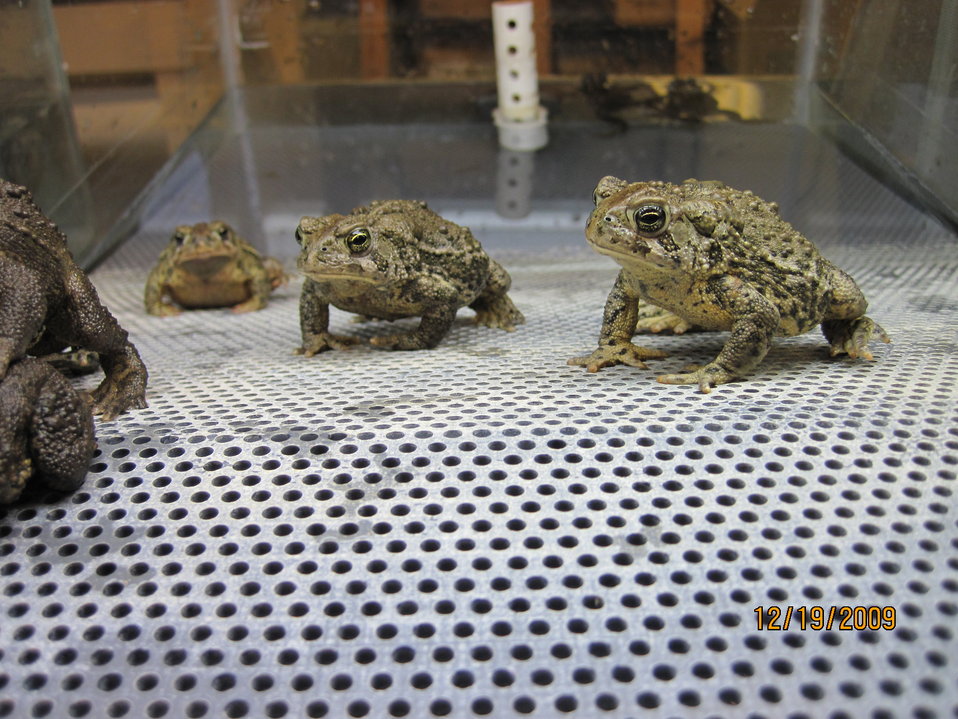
Wyoming Toad

The toads are given dry and wet habitat to live in at the hatchery.